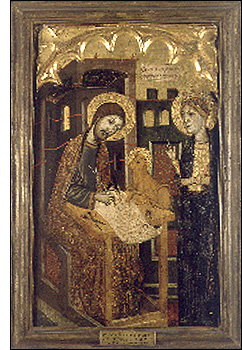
062m